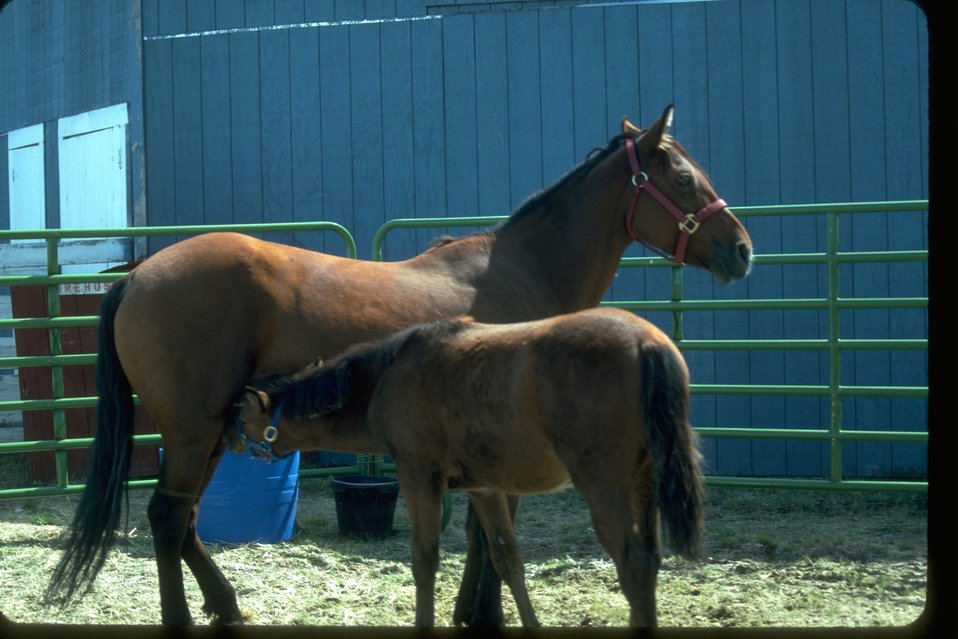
Two horses in corral at Wild Horse & Burro adoption.